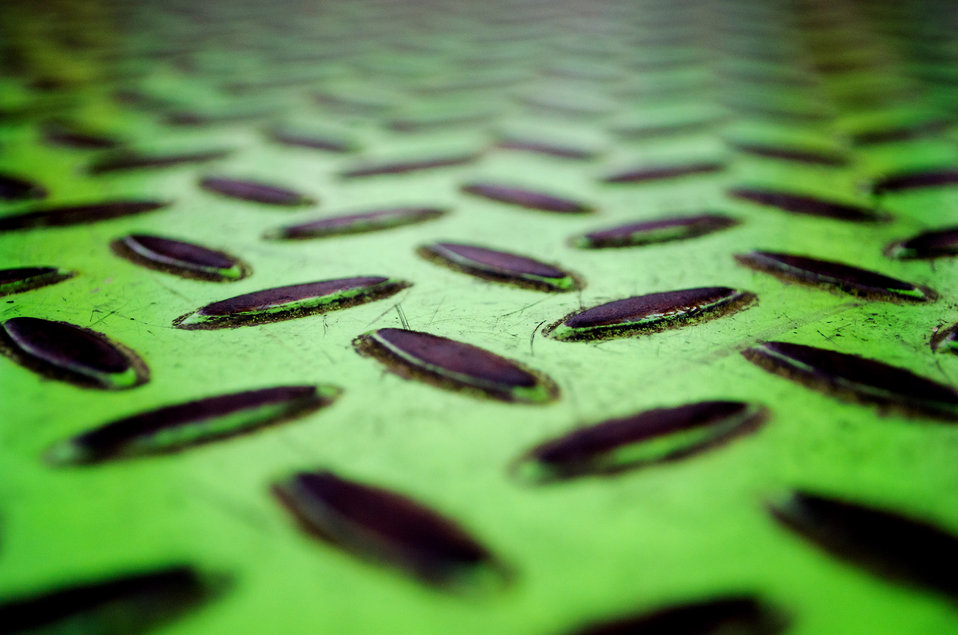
Green background.